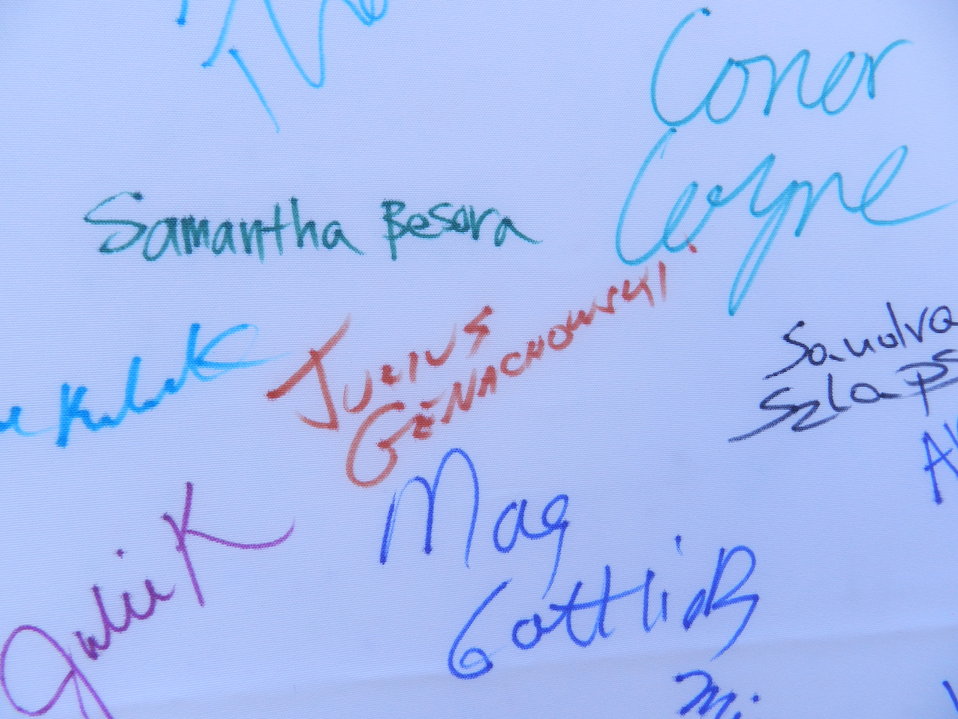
It Can Wait Pledge Day 9.19.12

Chairman Genchaowski's signature & others signatures on the Pledge board at the ‘No Text On Board’ Pledge Day Event, The George Washington University, Washington, D.C. September 19, 2012